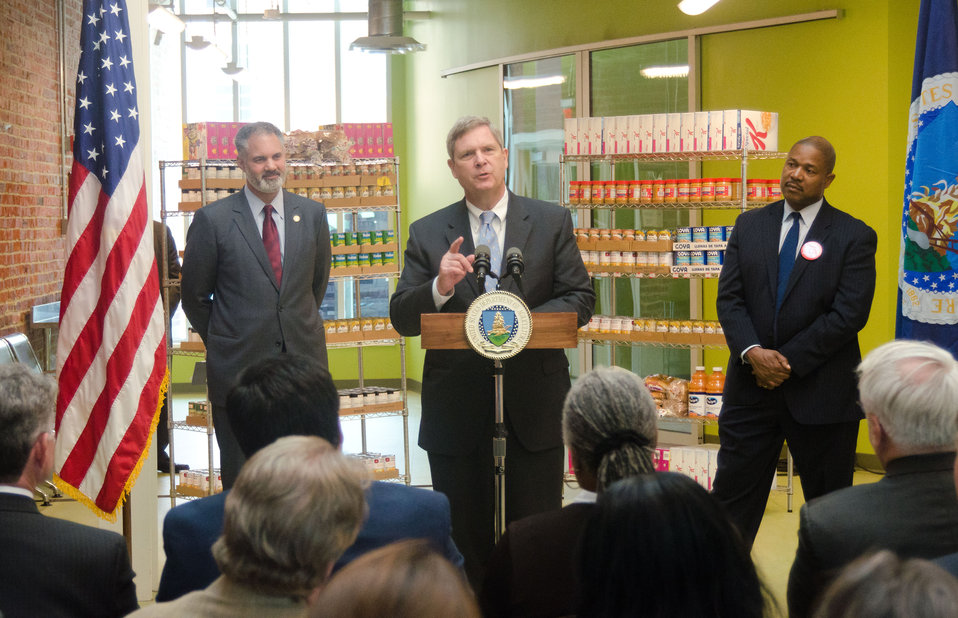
Agriculture Secretary Tom Vilsack Thursday (center), corperation for natinal and comunity Service CEO Patrick Corvington and Bread for the City President George Jones announced at Bread for the City, on April 29, 20ll in Washington, DC, that the USDA will become champions to end hunger and innovative partnerships to address hunger, especially among children USDA Photo by Lance Cheung.